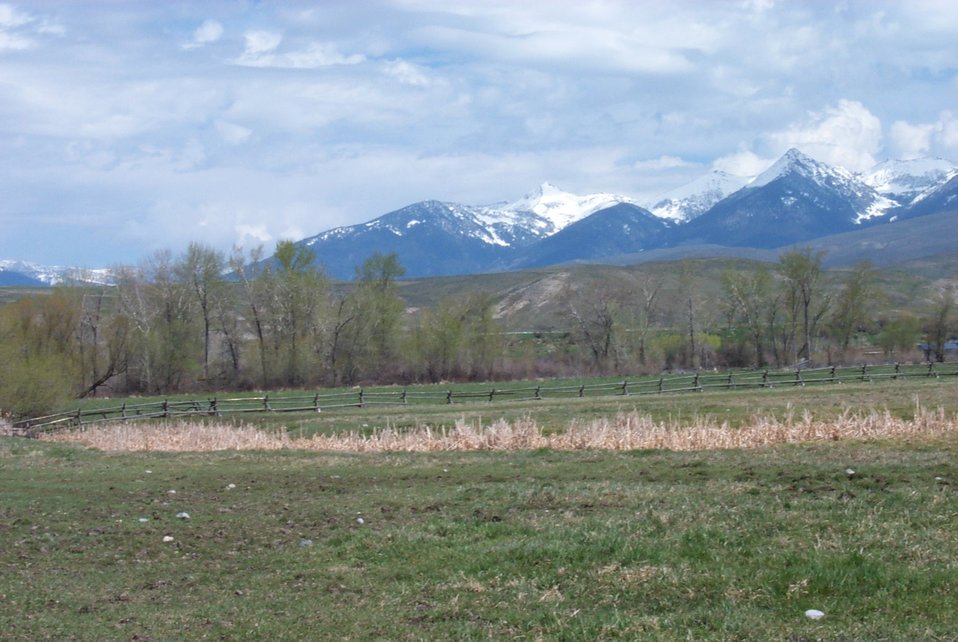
Realty Public access Exchange Salmon Field Office UCSC Upper Columbia Salmon Clearwater District